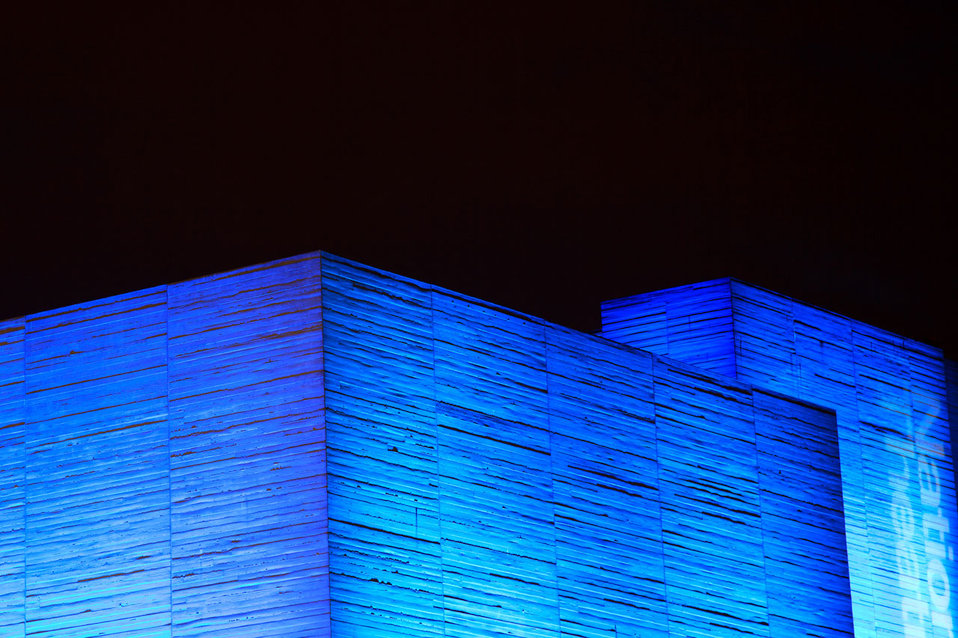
Blue cube building

National theatre in london at night.